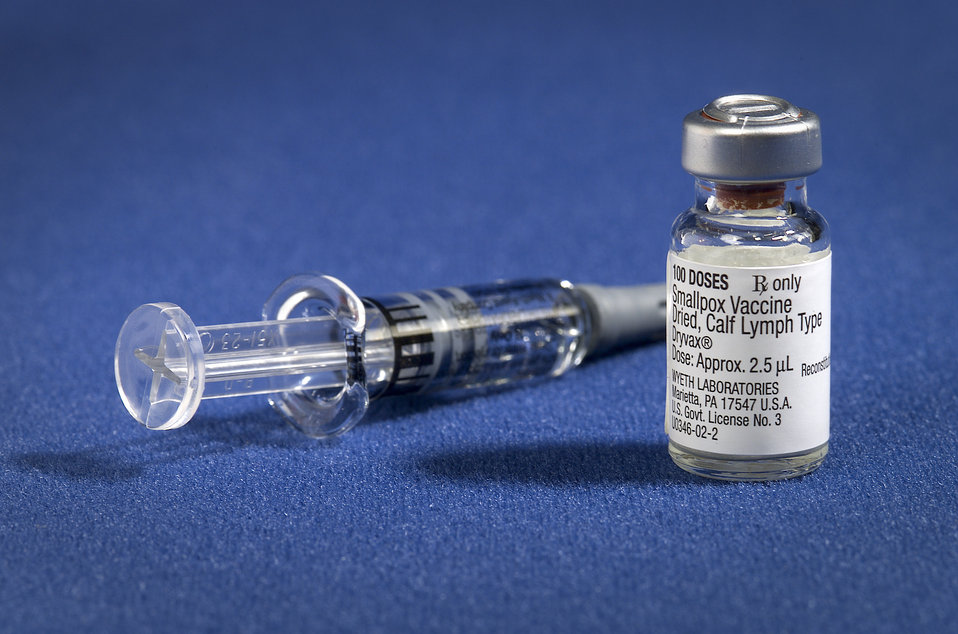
The smallpox vaccine diluent in a syringe along side a vial of Dryvax� dried smallpox vaccine.